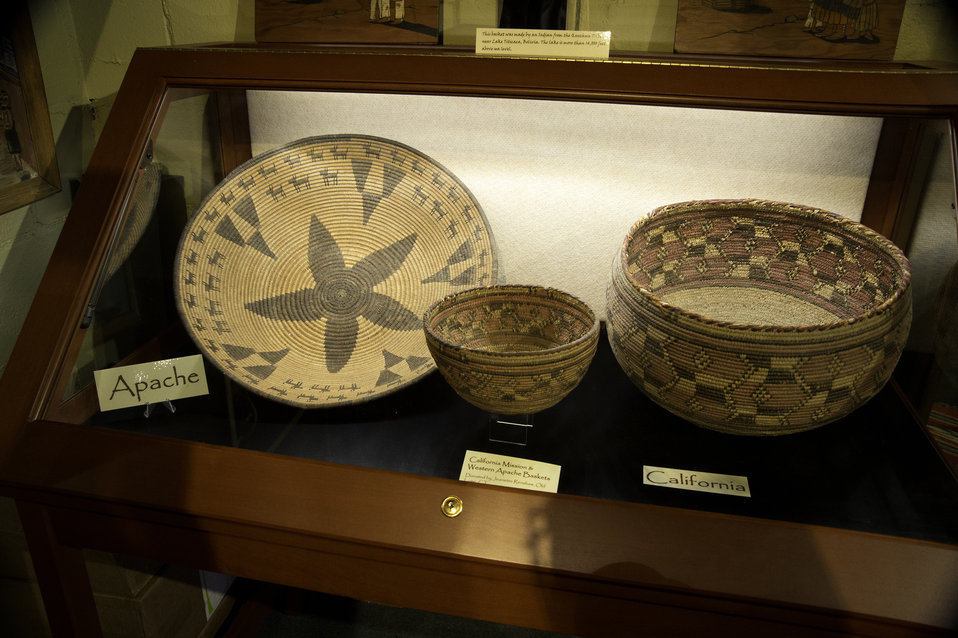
The Mohegan Tribe’s museum is the oldest Indian owned and operated museum in America. Gladys Tantaquidgeon along with her brother, Harold and father John, built the museum in 1931 in Uncasville, CT as a place to keep Mohegan treasures.